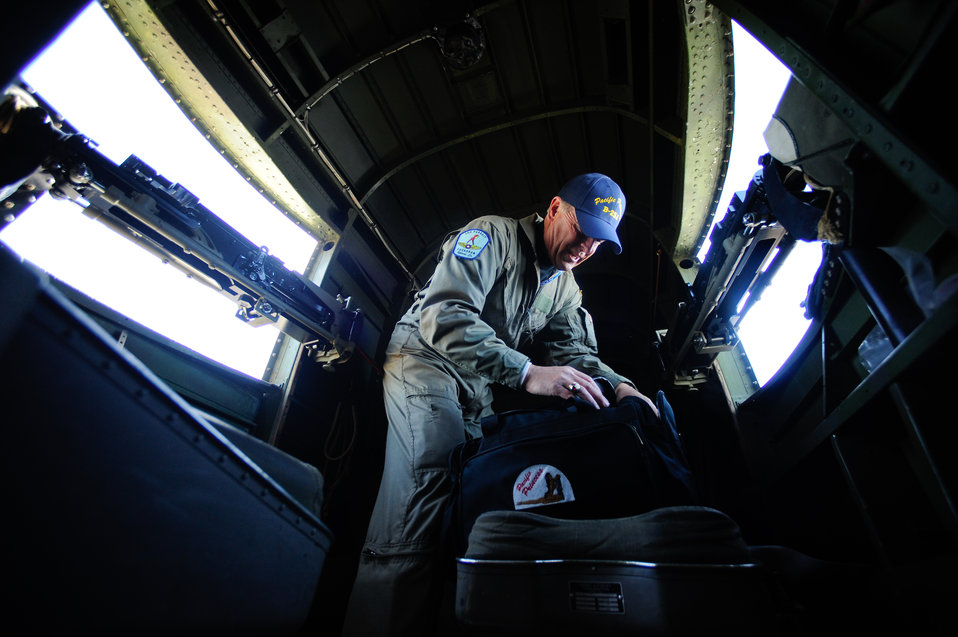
68th Doolittle Raiders Reunion

Mike Polley, pilot of the